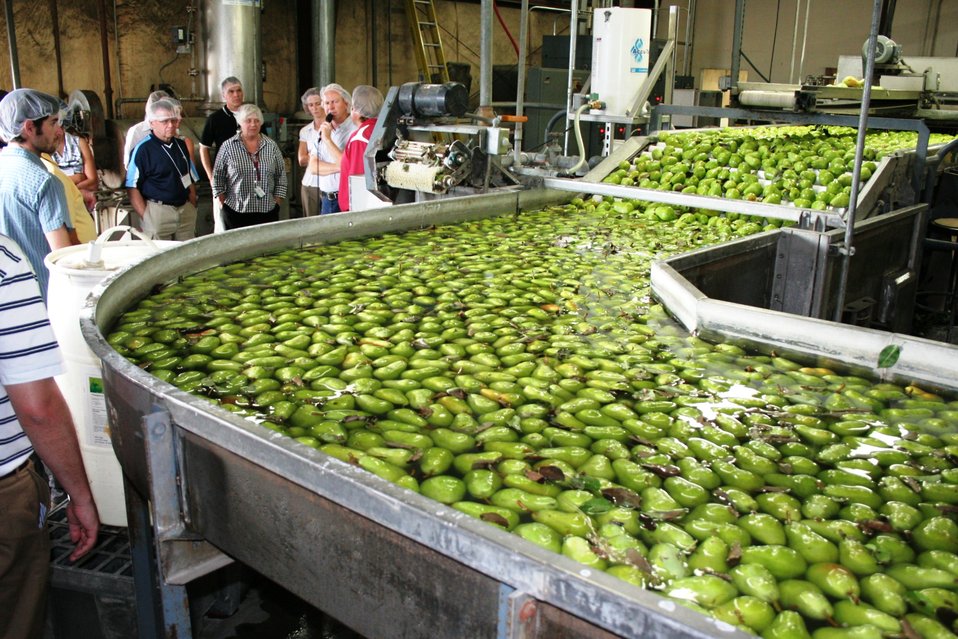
On the Road with Mike Taylor

FDA Deputy Commissioner Michael Taylor (left) and colleagues started a five-day tour of the Pacific Northwest on Sunday, Aug. 11, 2013 -- visiting Idaho, Oregon and Washington -- to get a first-hand look at produce production and irrigation operations, and to discuss the proposed Produce Safety Rule with growers, food industry representatives and state officials. The Pacific Northwest tour included a visit to the packing house at Valley Fruit in Wapato, Wash. For more about Mike's multi-region tour, read these FDA Voice blog posts:

• Hearing the Concerns of Maine Growers Striving for Agricultural Diversity
• On the Road with Mike Taylor: Touring the Pacific Northwest
• On the Road with Mike Taylor, Day 2: Frank Talk in Farm Country
• On the Road with Mike Taylor, Day 3: Families and Partnerships
• On the Road with Mike Taylor, Day 4: Looking to the Future